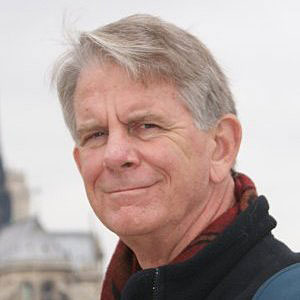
Thomas Calnan -- Southwest Region

Thomas Calnan enlisted in the U.S. Navy in 1968 and served as an air traffic controller from 1968 to 1972. After training, his tours of duty included two years at the Naval Air Station in Corpus Christi and about one year at the Naval Station in Adak, Alaska. He is currently the Texas state liaison (based in Austin) for the Coastal Impact Assistance Program (CIAP), helping the state and the 18 coastal counties with applying for, implementing and monitoring this coastal grant program. He accepted this position after retiring from the state, having spent 38 years as a coastal biologist, mostly in Austin.